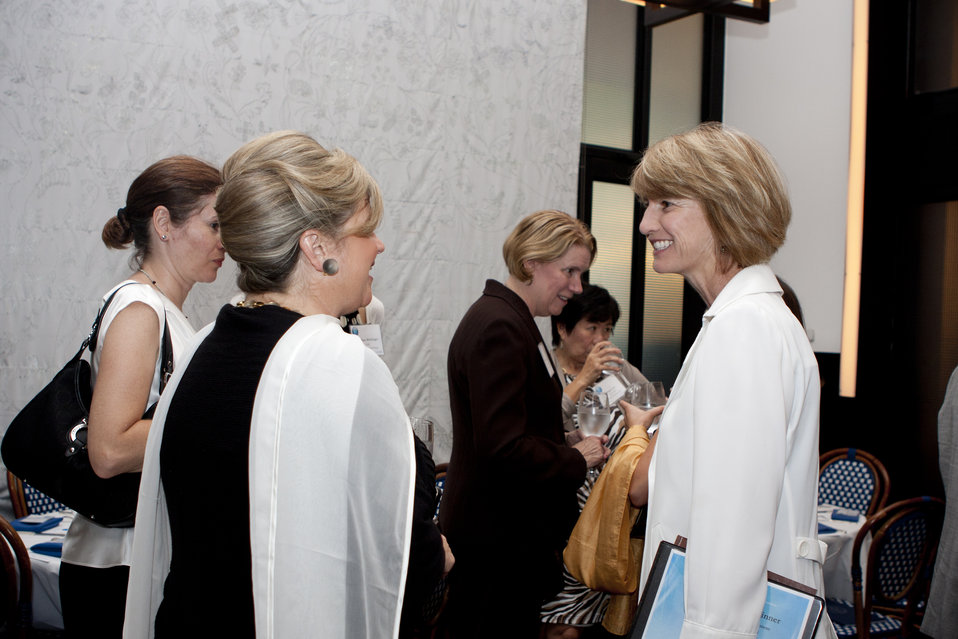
WomenandEnergy 15